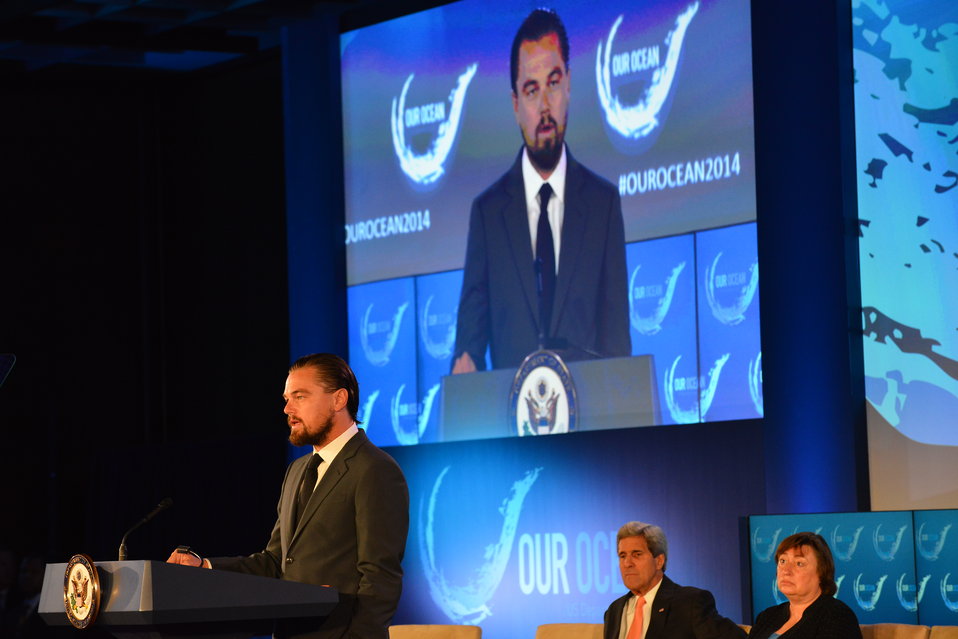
Leonardo DiCaprio Delivers Remarks at the 'Our Ocean' Conference

Leonardo DiCaprio delivers remarks at the 2014 'Our Ocean' Conference at the U.S. Department of State in Washington, D.C. on June 17, 2014.